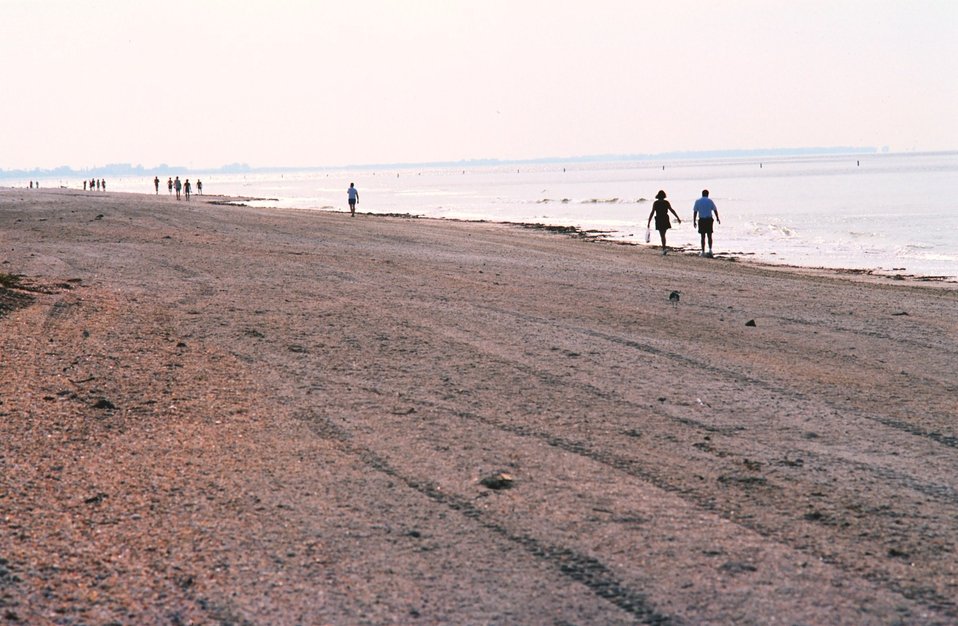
Strolling along the beach looking for the random treasure